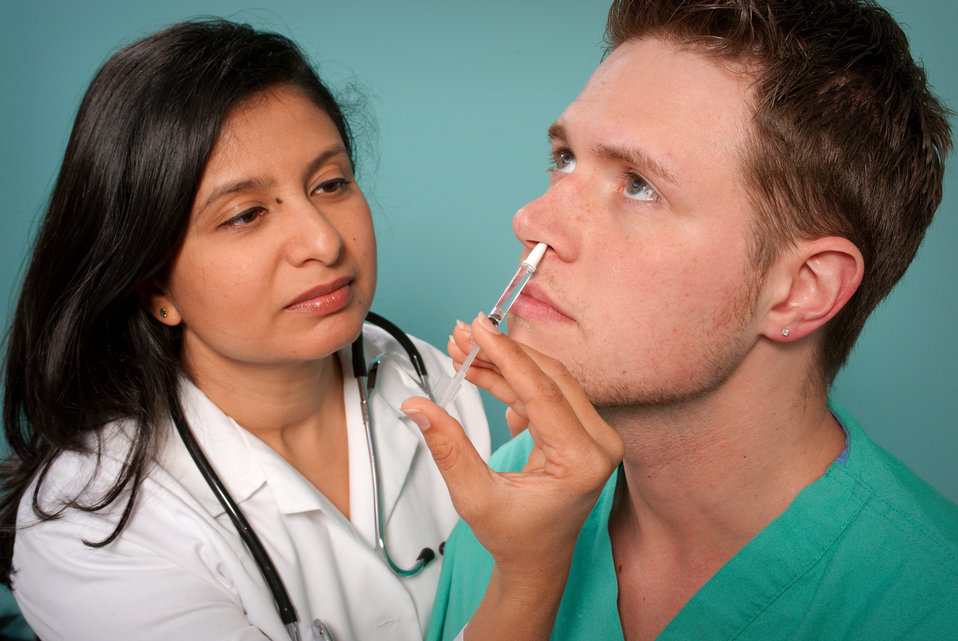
This 2009 image depicts a healthcare practitioner as she was administering the H1N1 live attenuated intranasal vaccine (LAIV) to a male recipient. Using a small syringe, she was delivering the vaccine mist into the man's left nostril.